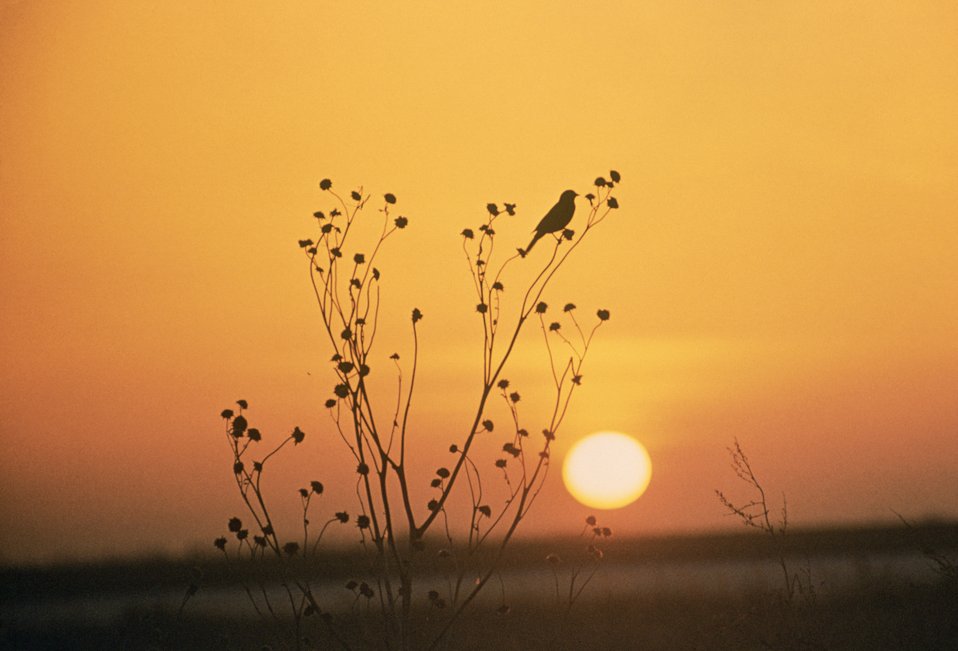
tewaukon sunset

Tewaukon National Wildlife Refuge, ND